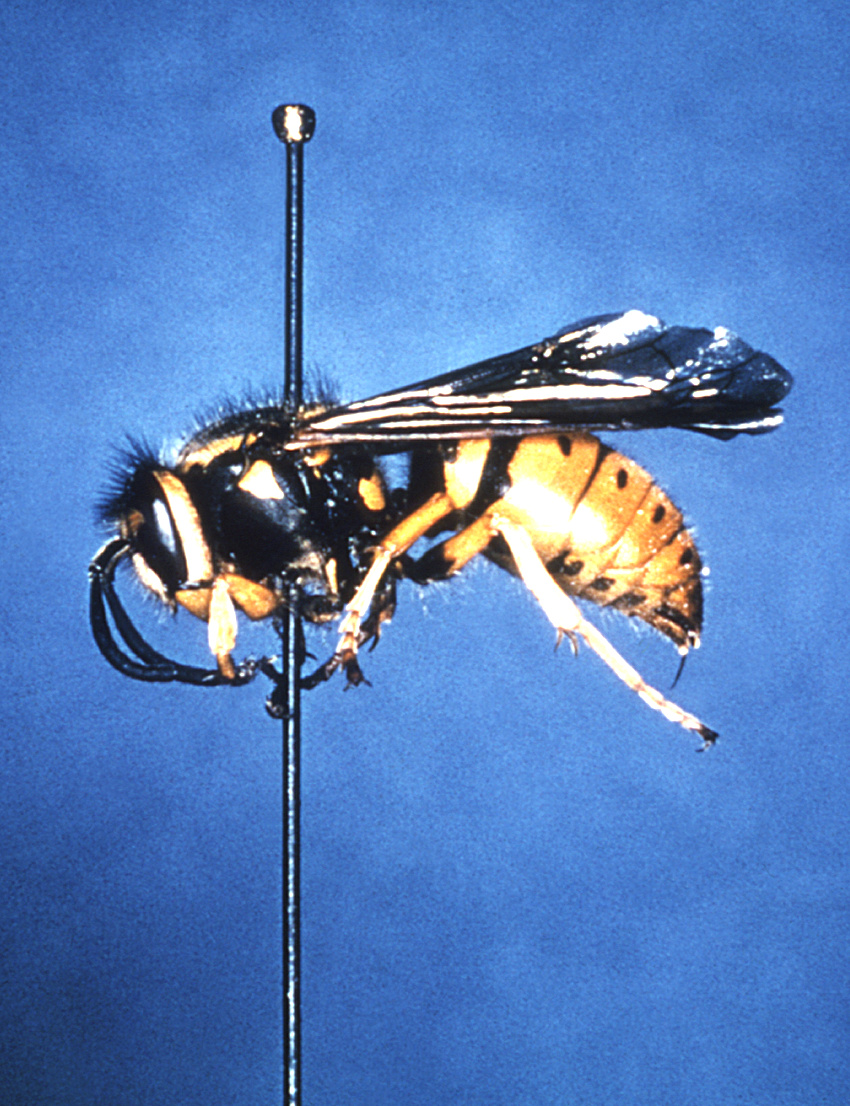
This image depicts a lateral view of a 'queen' yellowjacket wasp, Vespula maculifrons.